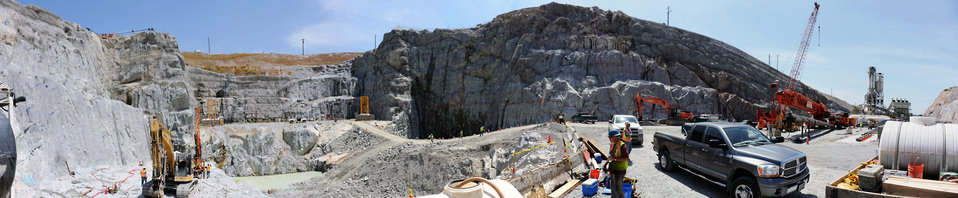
Panoramic view of auxiliary spillway construction at Folsom Dam site

Using digital imaging technology that “stitches” multiple images together to create a panoramic image, geologists for the U. S. Army Corps of Engineers Sacramento District provided this glimpse into the past of the Folsom Dam Joint Federal Project auxiliary spillway construction. The images used in the panoramic were taken May 1, 2012 at the Folsom Dam in Folsom, Calif. The Sacramento District is building the spillway in cooperation with the U.S. Bureau of Reclamation, the Central Valley Flood Protection Board, and the Sacramento Area Flood Control Agency to improve the safety of the existing dam and reduce flood risk for the greater Sacramento area. (U.S. Army photo illustration by Coralie Wilhite/Released)